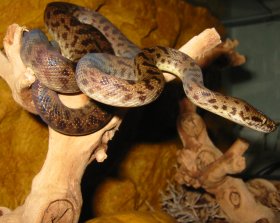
Deutsch: Ein Gefleckter Python aus der Gattung der Südpythons. An Antaresia maculosa (spotted python).